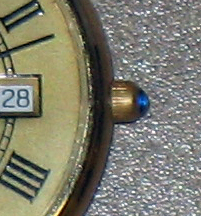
A round sapphire cabochon on the crown of a men's dress watch.